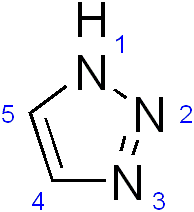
Chemical structure of en:1,2,3-triazole created with ChemDraw.